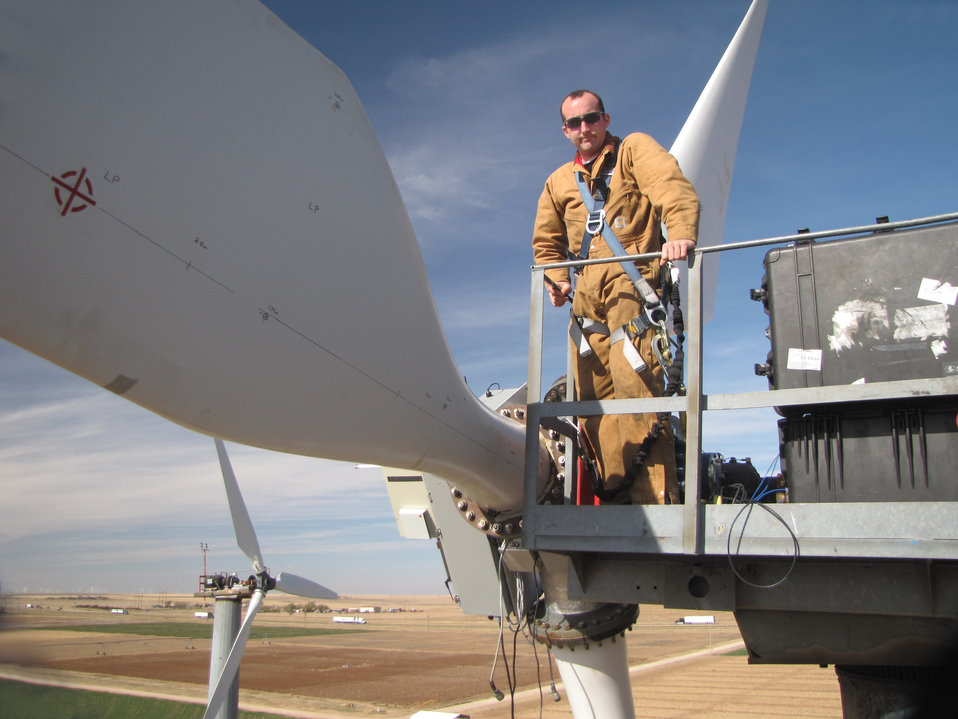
Scaled Wind Farm Technology (SWIFT) Facility

Project lead Jon White will oversee the installation of turbines at SWIFT in Lubbock, Texas.